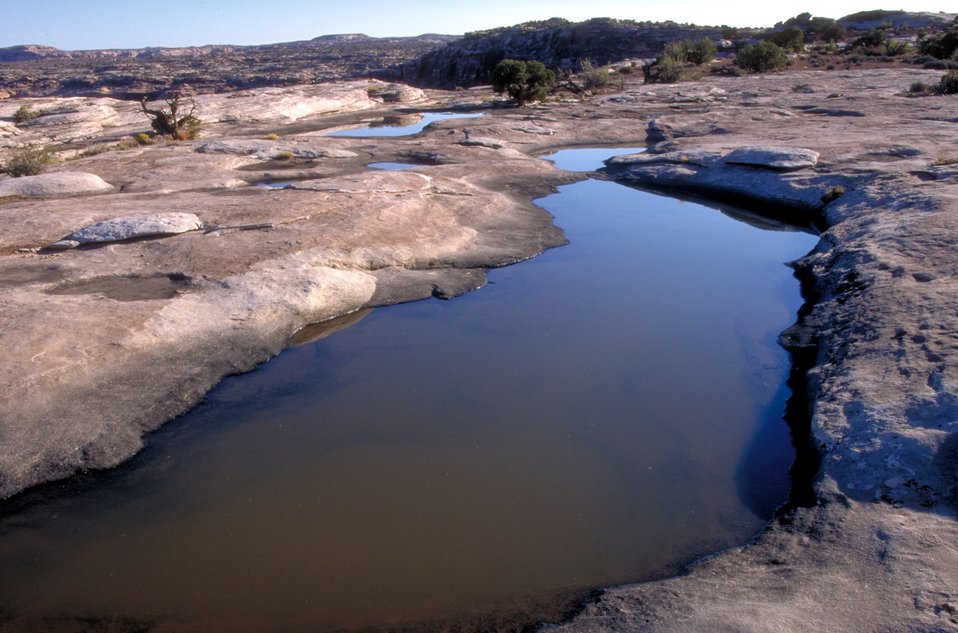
Pools in slickrock at Spring Canyon Point near the Green River.